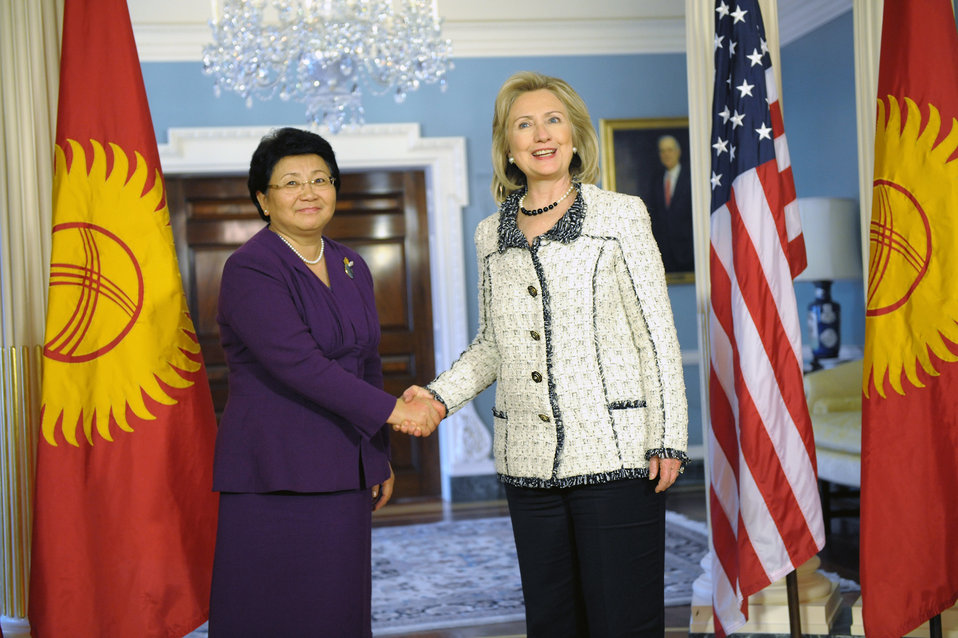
Secretary Clinton Shakes Hands With Kyrgyzstani President Otunbayeva

U.S. Secretary of State Hillary Rodham Clinton shakes hands with Kyrgyzstani President Roza Otunbayeva after their bilateral meeting at the U.S. Department of State in Washington, D.C., on March 8, 2011.